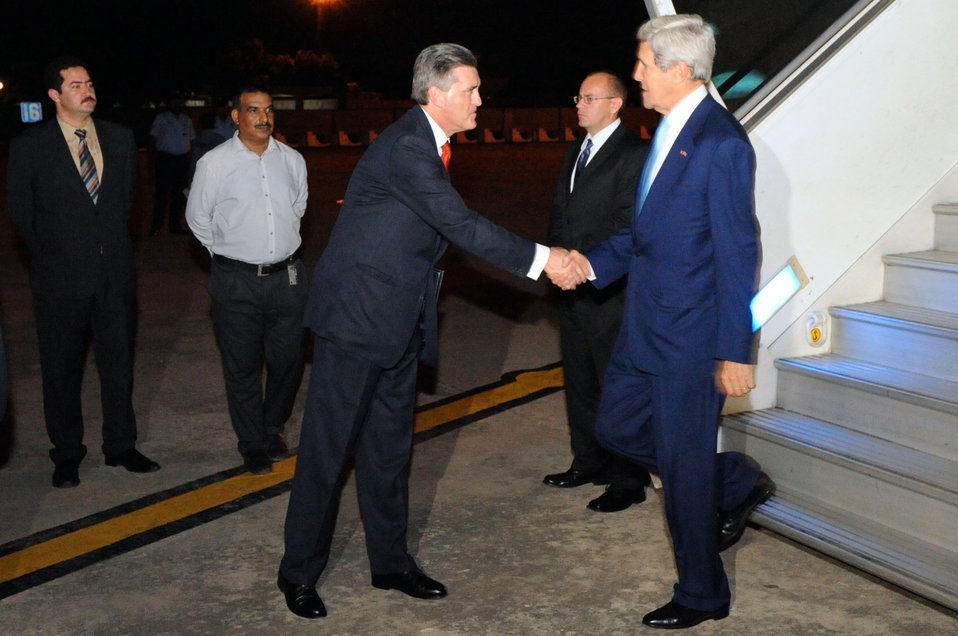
Ambassador Olson Welcomes Secretary Kerry to Islamabad, Pakistan

U.S. Secretary of State John Kerry is greeted by U.S. Ambassador to Pakistan Richard Olson as he arrives in Islamabad, Pakistan, on July 31, 2013.